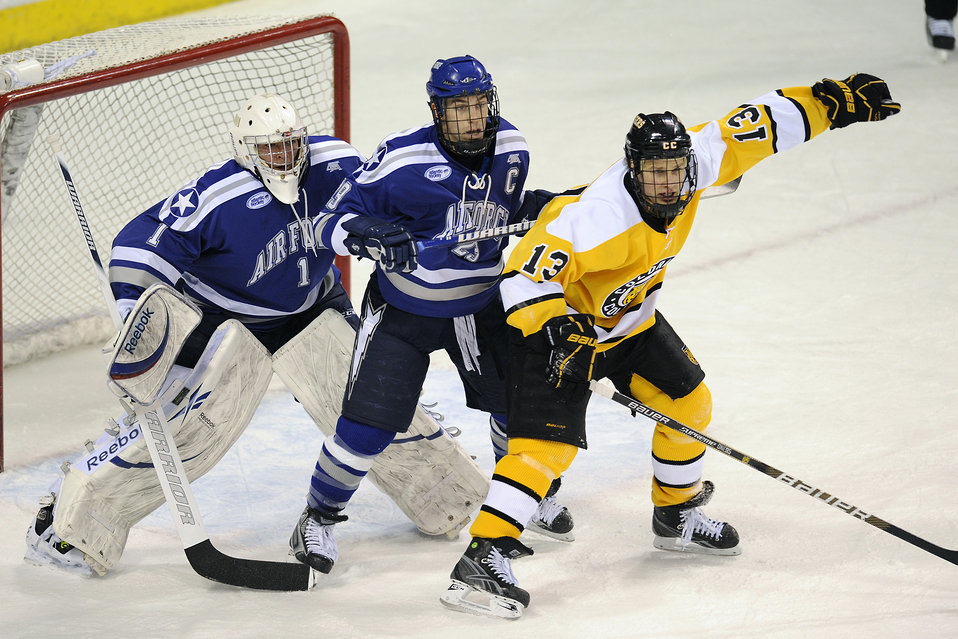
Falcons lose in match with Colorado Tigers

U.S. Air Force Academy senior goalie Andrew Volkening and senior defenseman Brett Nylander are close-in to the goal as Rylan Schwartz awaits a pass. Colorado College beat Air Force 2-0 in a non-conference hockey game Feb. 5, 2010, at the World Arena in Colorado Springs, Colo. Air Force fell to 12-11-6 overall.